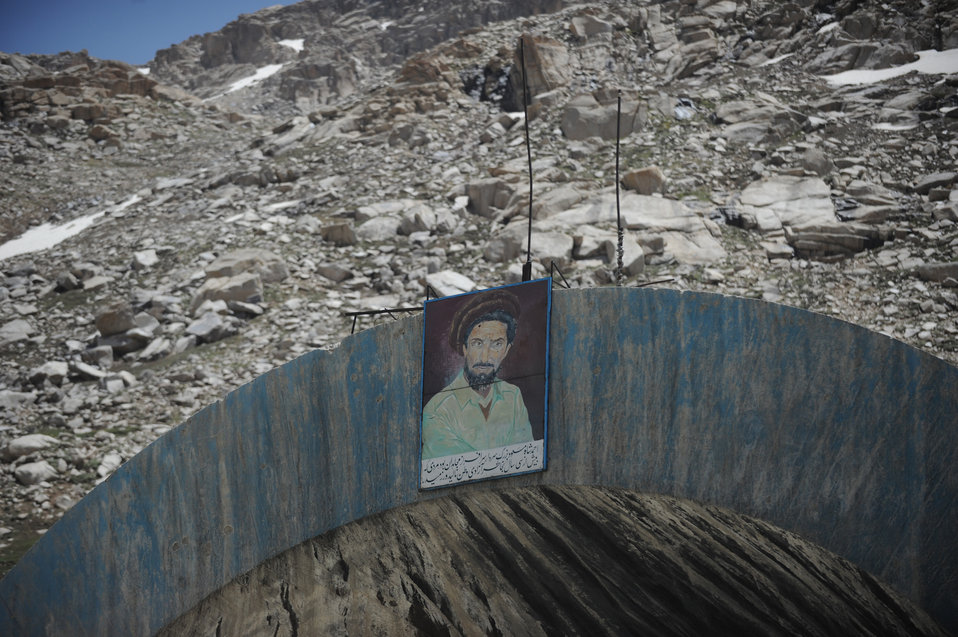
The North entrance to the Salang Tunnel on the border of Parwan and Baghlan Provinces, Afghanistan, on Wednesday, June 15, 2011. (S.K.Vemmer/Department of State)